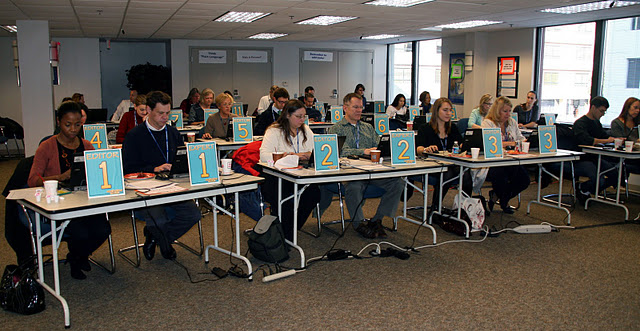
Drug Facts Chat Day

NIDA staffers answering questions on Chat Day